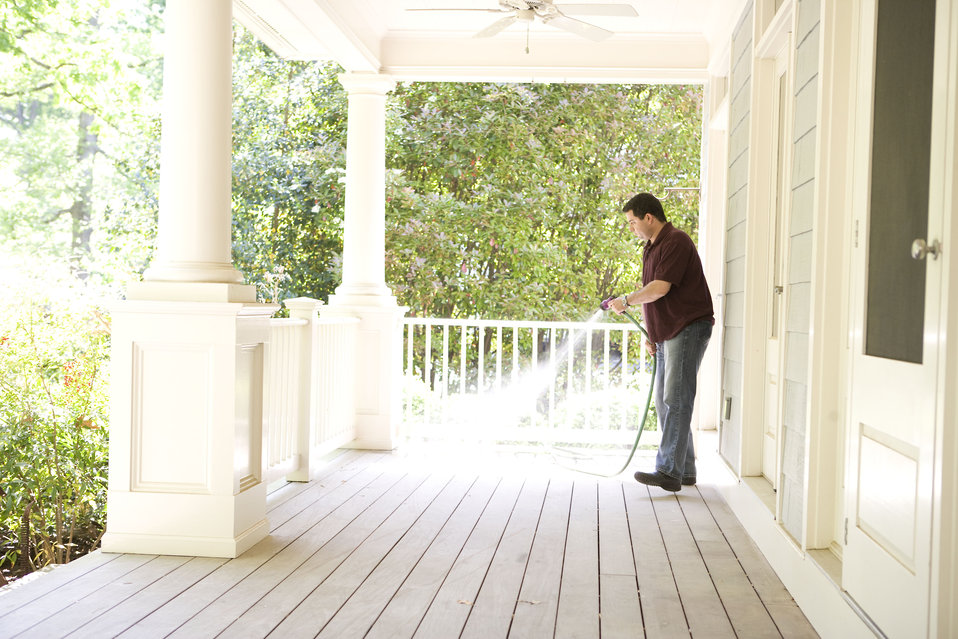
Home maintenance includes both the indoor, and as was the case here, outdoor environment, and is an ongoing process with which a homeowner need to keep up in order to provide for a healthy living space. Keeping your porch dust-free reduces the amount of contaminants tracked into the house.This man was in the process of cleaning his home's porch using a broom, as well as a water hose. In this way, airborne particulates including dust and pollen, could be removed from this area of his home, reducing the detrimental effects upon his family's respiratory systems. These irritants can sometimes result in sinus infections, and asthma.